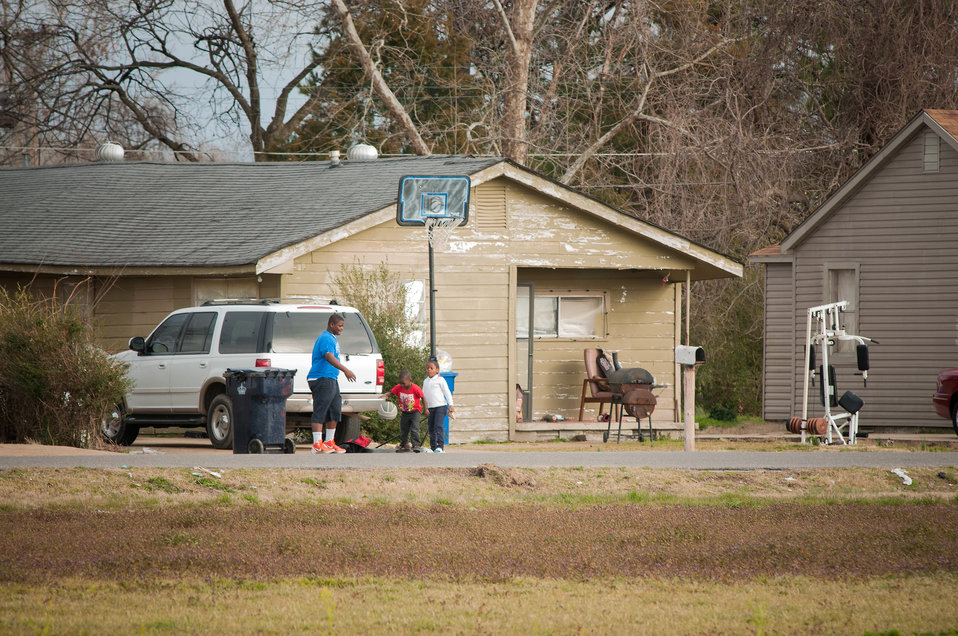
A family plays basketball in Forest City, AR on Mar. 4, 2013. The U.S. Department of Agriculture (USDA) in partnership with Heifer International (an International organization whose mission is to work with communities to end hunger and poverty and care for the Earth) and various for-profit and non-profit organizations have organized the Seeds of Change Implementation Plan to use sustainable agriculture to build food systems in the Arkansas Delta. The program has evolved into the Arkansas Delta Seeds of Change (ADSOC) Initiative. The East Arkansas Enterprise Community, Inc. in Forrest City, AR is one of 42 community-based organizations located in high poverty areas in the U.S.to benefit from the ADSOC Initiative.